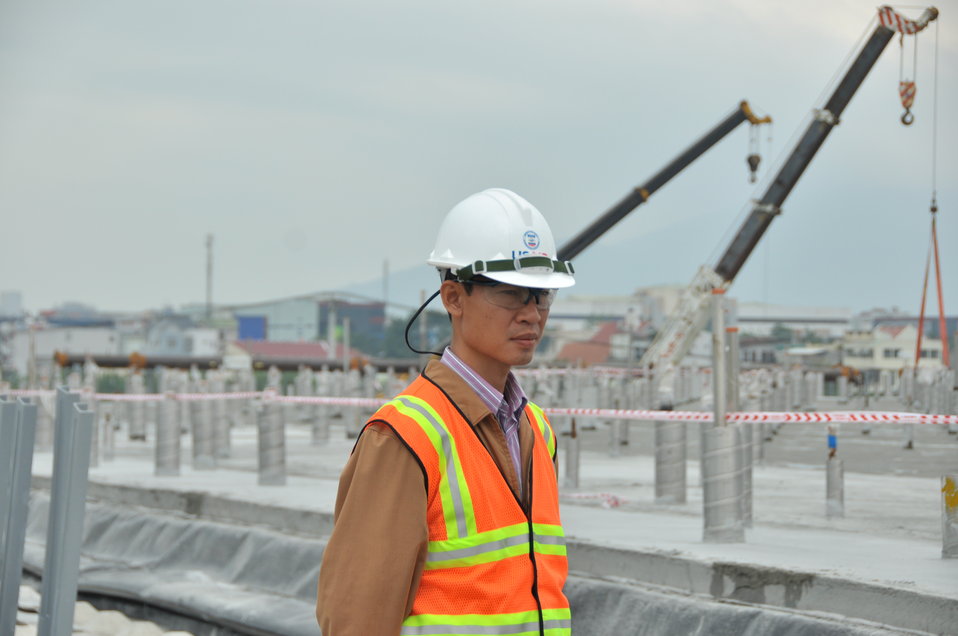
USAID Dioxin Contamination Project Progress: Containment Structure

Progress at the Environmental Remediation of Dioxin Contamination Project at the Danang Airport

December 4, 2013